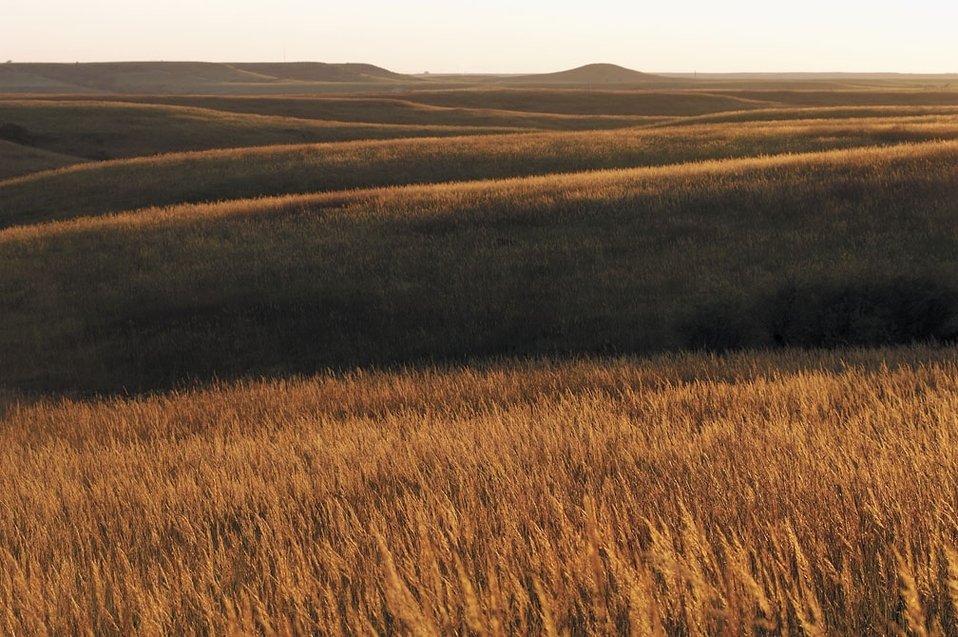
Golden konza tallgrass prairie in Kansas, part of the Flint Hills Legacy Conservation Area.